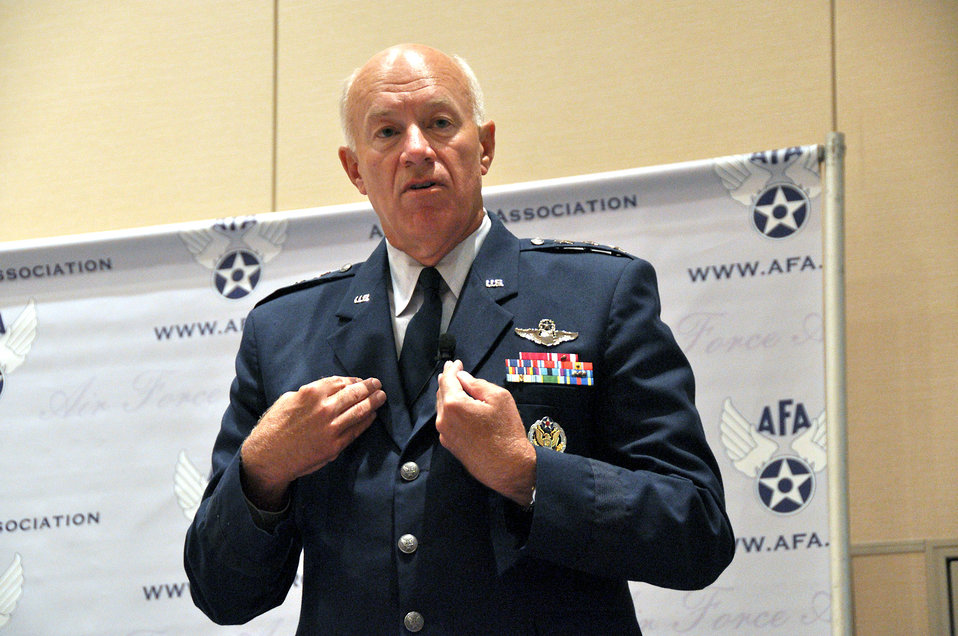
General Wyatt at the AFA Conference

Lt. Gen. Harry Wyatt III, director of the Air National Guard, speaks to conferees at the Air Force Association Air and Space Conference and Technology Exposition at National Harbor, Md., Sept. 14.